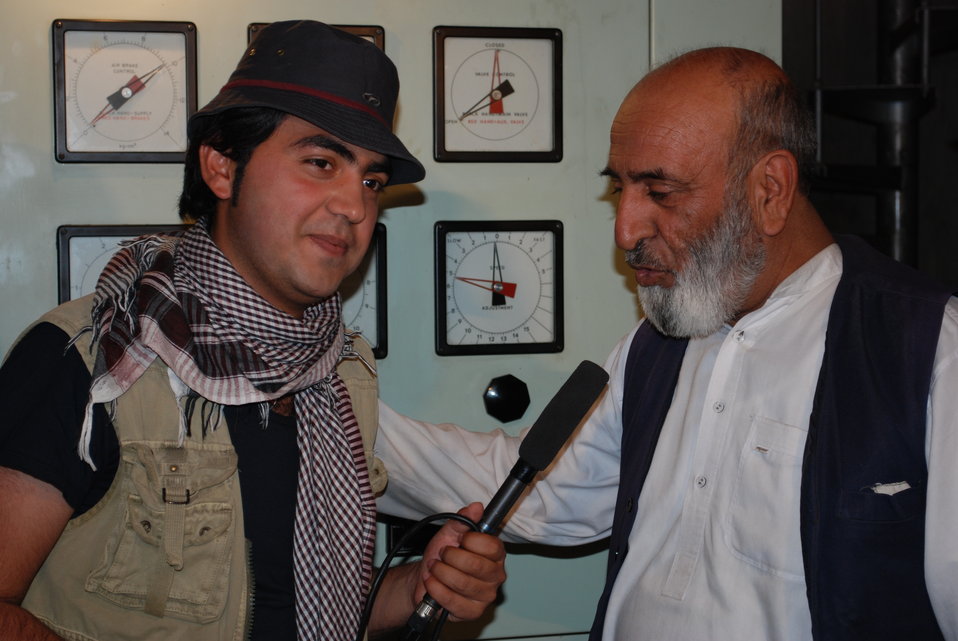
'On the Road' in Kandahar